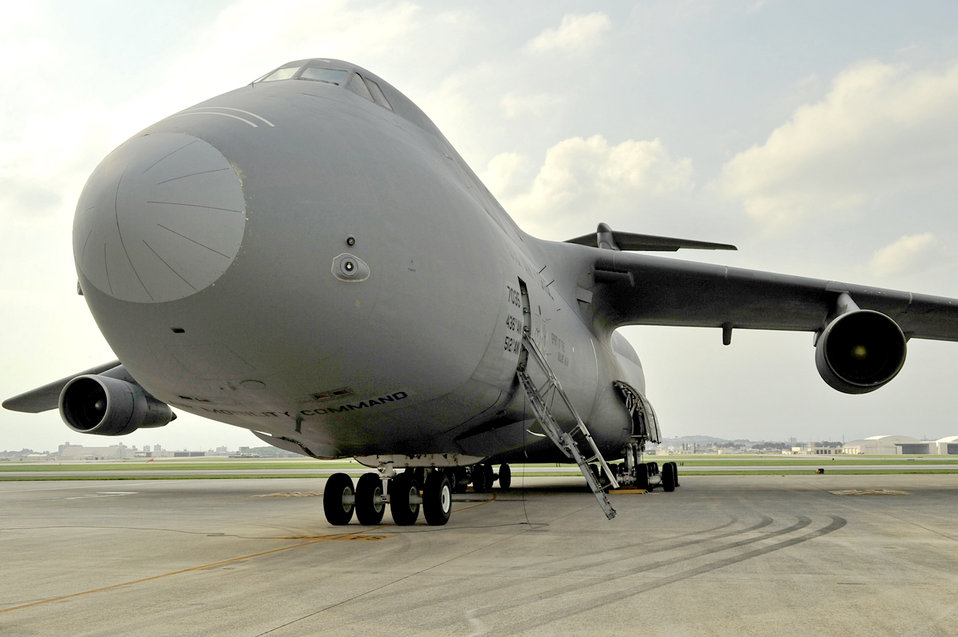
Aircraft rerouted through Kadena Air Base

A C-5 Galaxy sits on the ramp May 13, 2010, at Kadena Air Base, Japan. Air Mobility Command officials are re-routing some C-5s and C-17 Globemaster IIIs through the Pacific region from Southwest Asia due to volcanic activity in Iceland that is affecting air traffic.